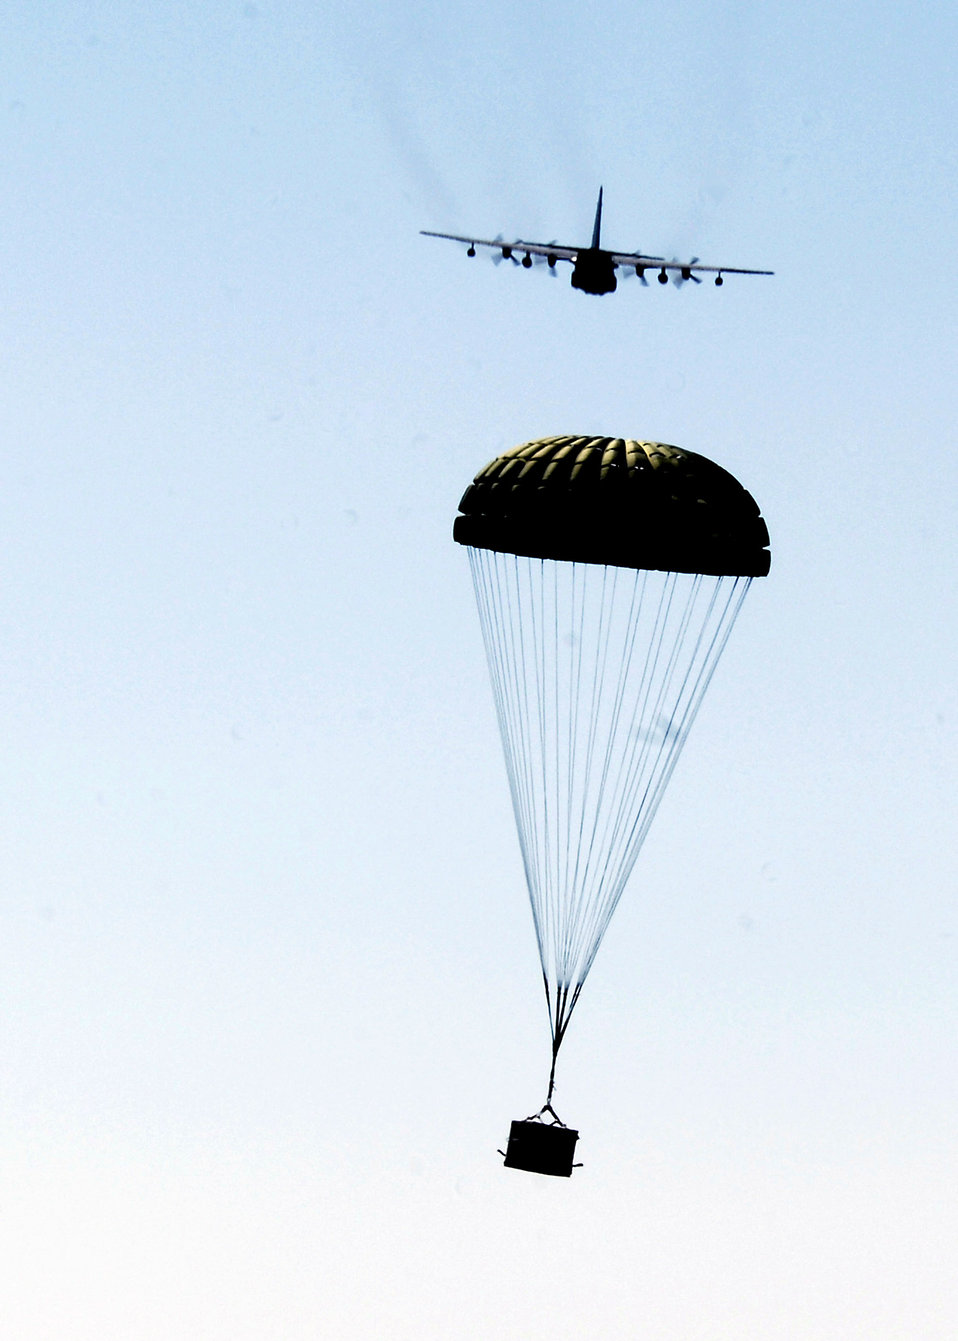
Cannon Airmen train for special operations forces resupply

An MC-130W Combat Spear drops a container release system load at Melrose Air Force Range, N.M., during a training exercise Sept. 23. The drops are done at least once a week and prepares the aircrews for resupply missions in areas that have no airfields.